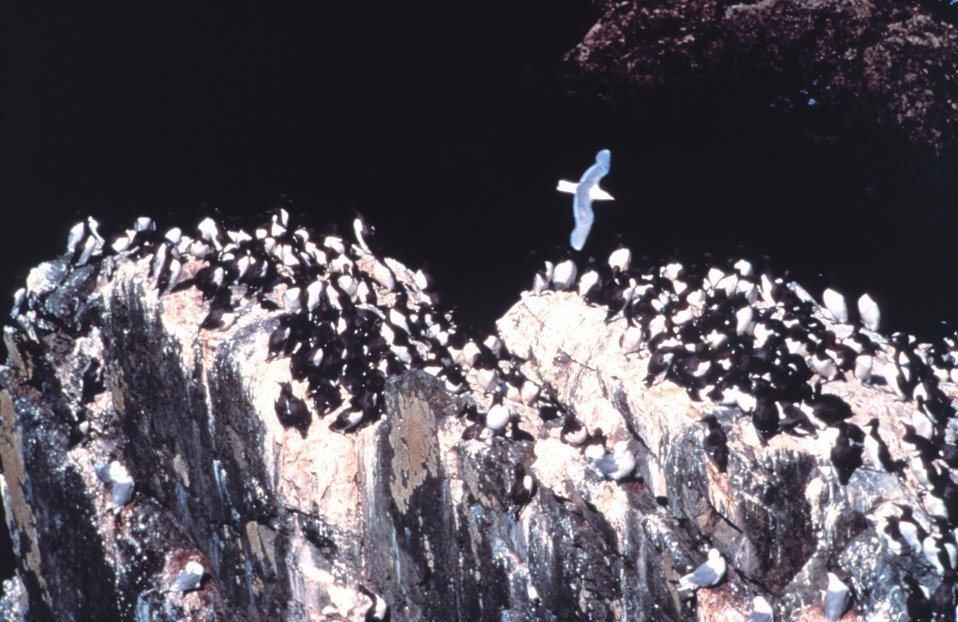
Murre colony